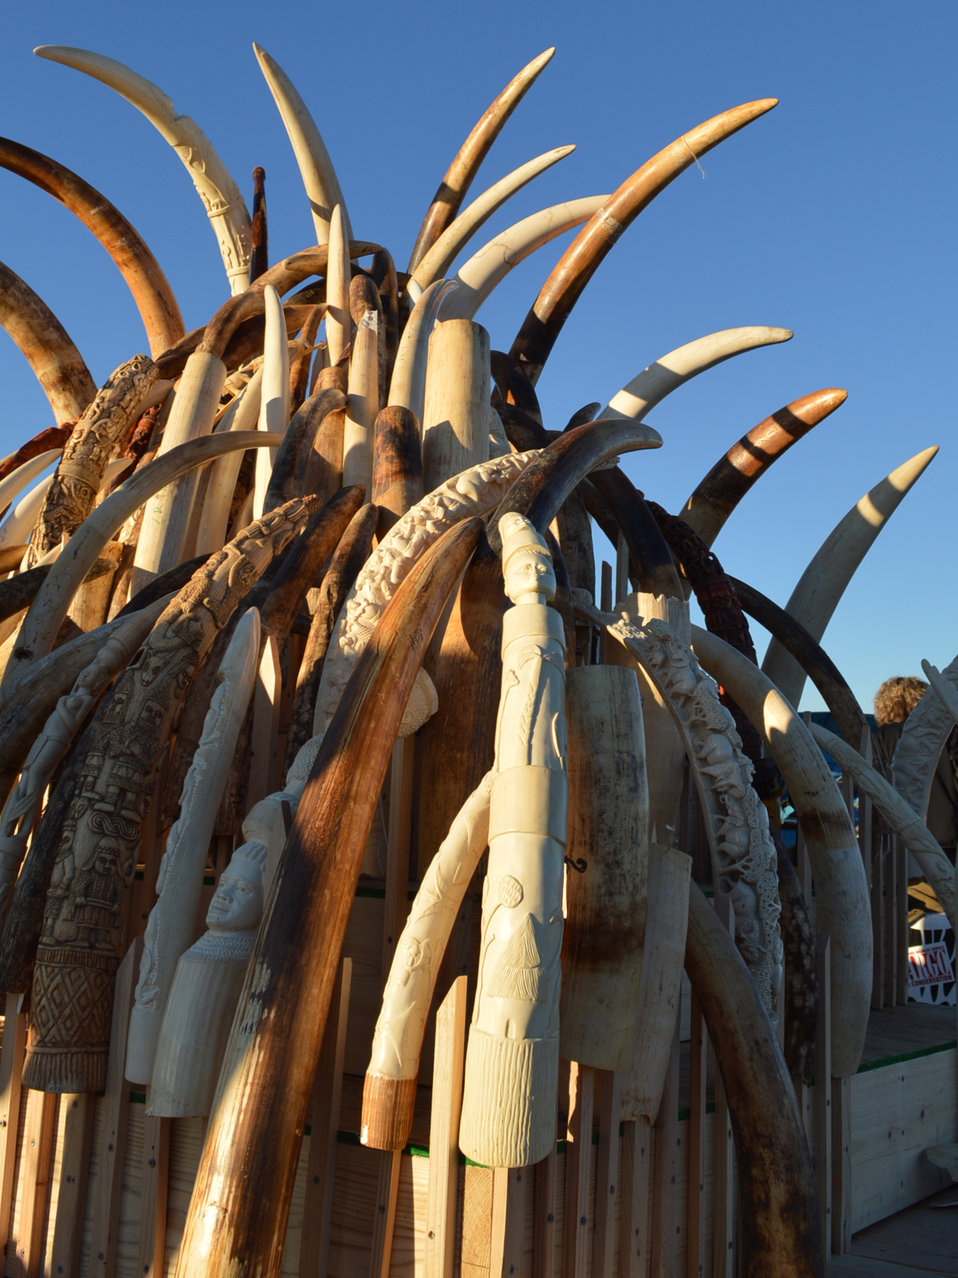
Ivory tusk tower